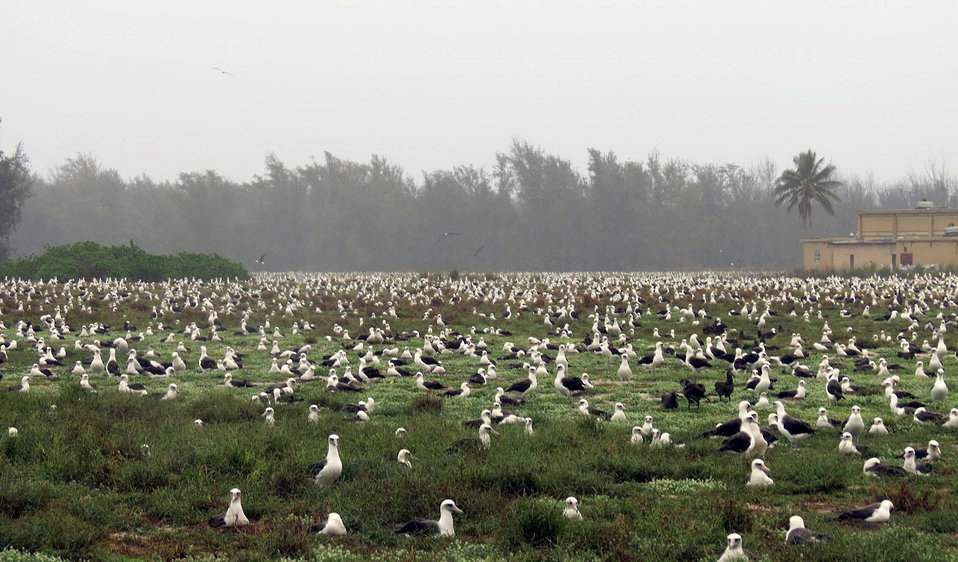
albatross colony

Laysan albatross nest in massive colonies at Midway National Wildlife Refuge in the Pacific Islands in mid-January 2012.